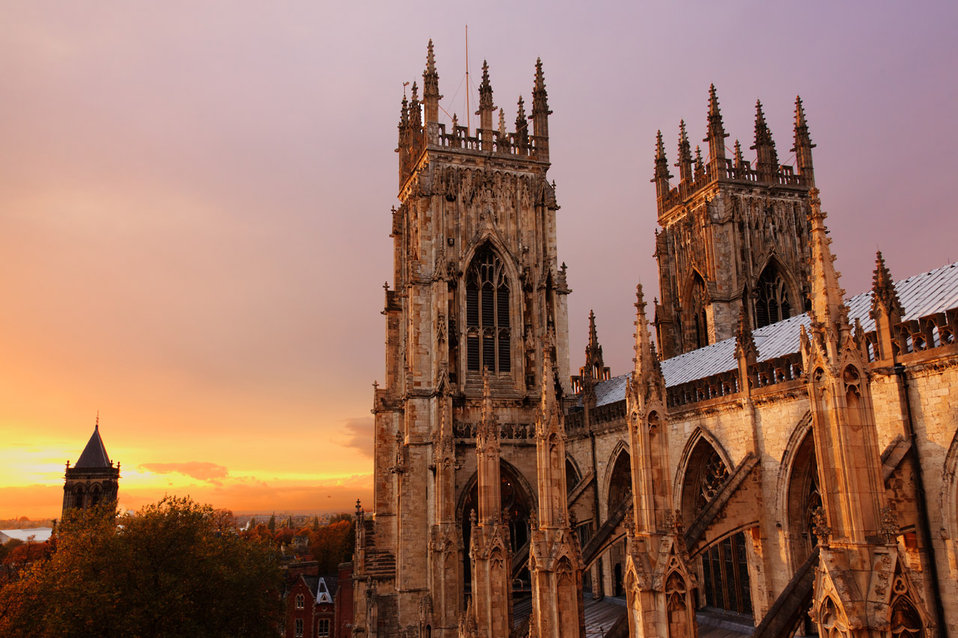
Cathedral in the evening

York minster at sunset in autumn.